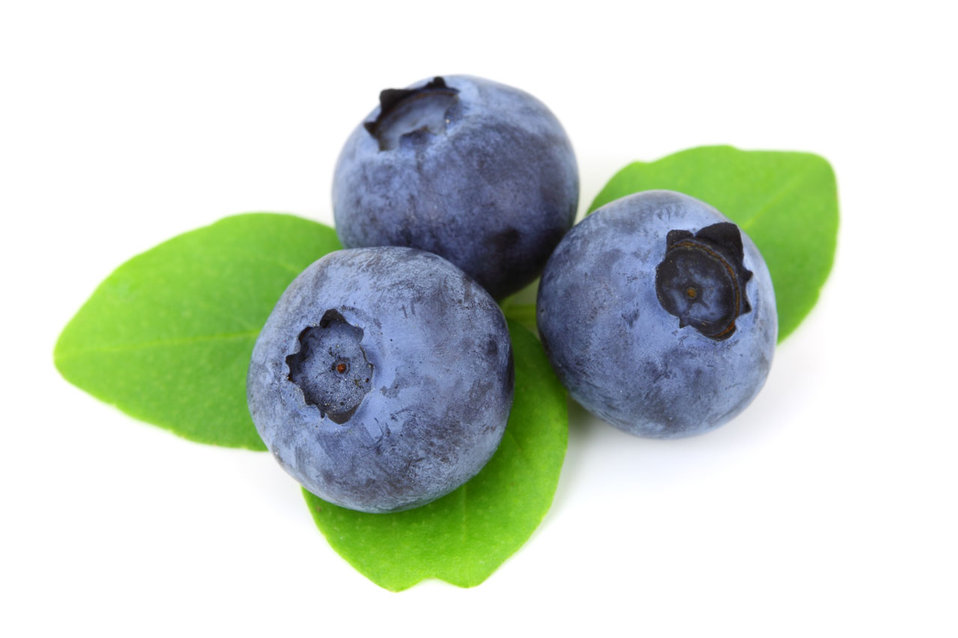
Blueberry

Fresh blueberry isolated on white background.